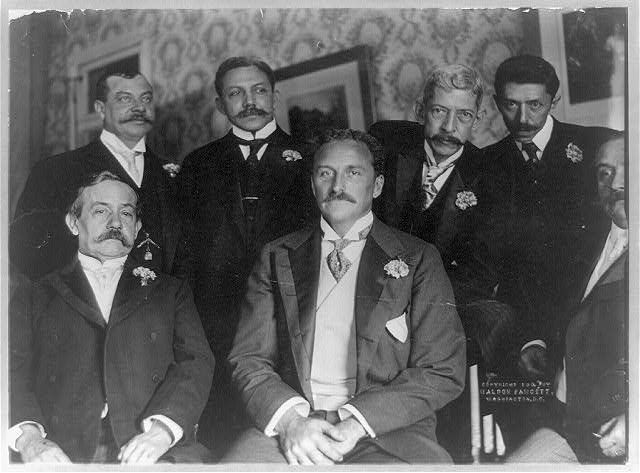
Robert Bacon, U.S. Secretary of State

Robert Bacon, pictured in center, U.S. Secretary of State 27 January 1909 to 5 March 1909.
'With Diplomats'
Photo by Waldon Fawcett.

From lcweb2.loc.gov/cgi-bin/query/h?pp/PPALL:@field(NUMBER @1(...